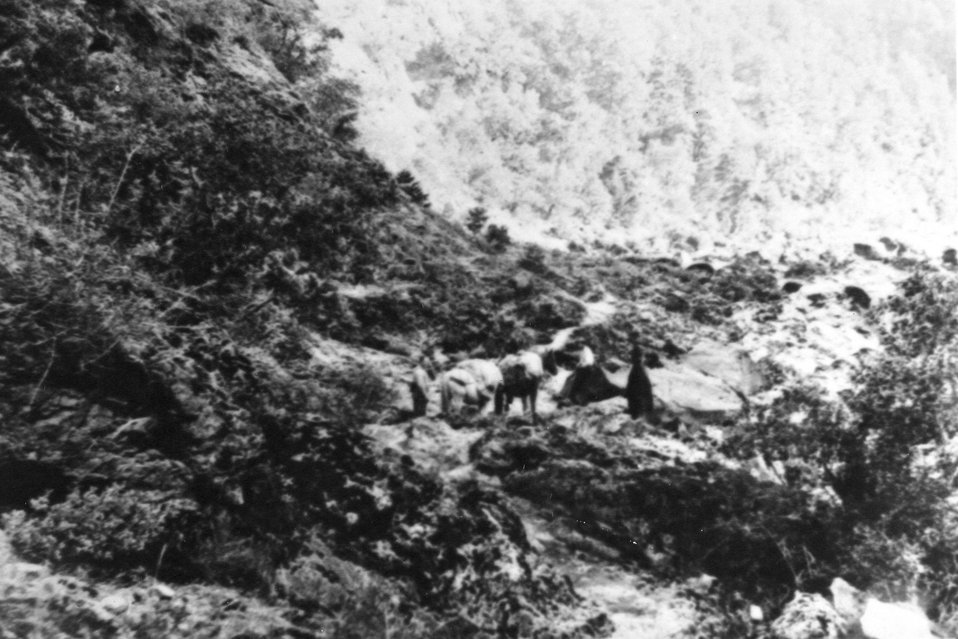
Rogue River Trail